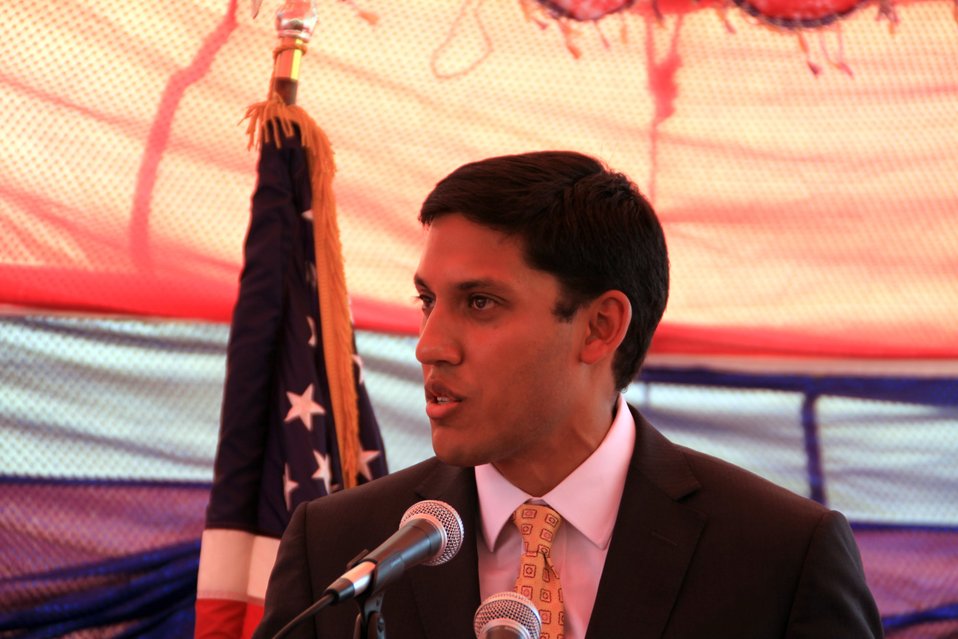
Badam Bagh Farm